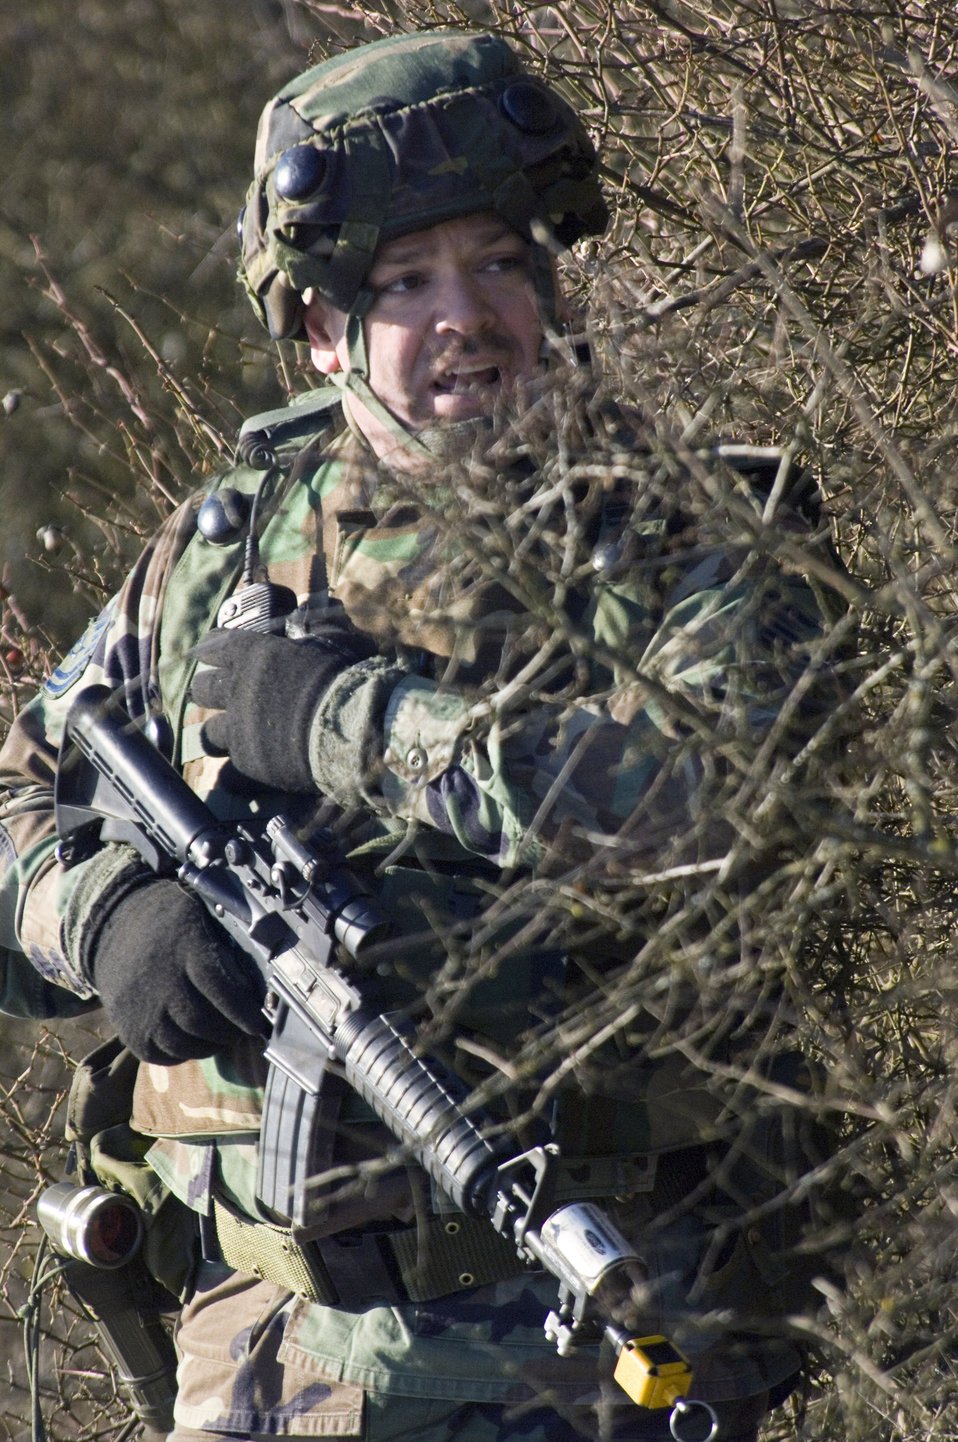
Creek Defender

BAUMHOLDER, Germany (AFPN) -- Tech. Sgt. Greg Marchand radios his squad members while under a simulated attack during a Creek Defender training drill. The security force specialist is with the 52nd Security Forces Squadron at Spangdahlem Air Base, Germany.